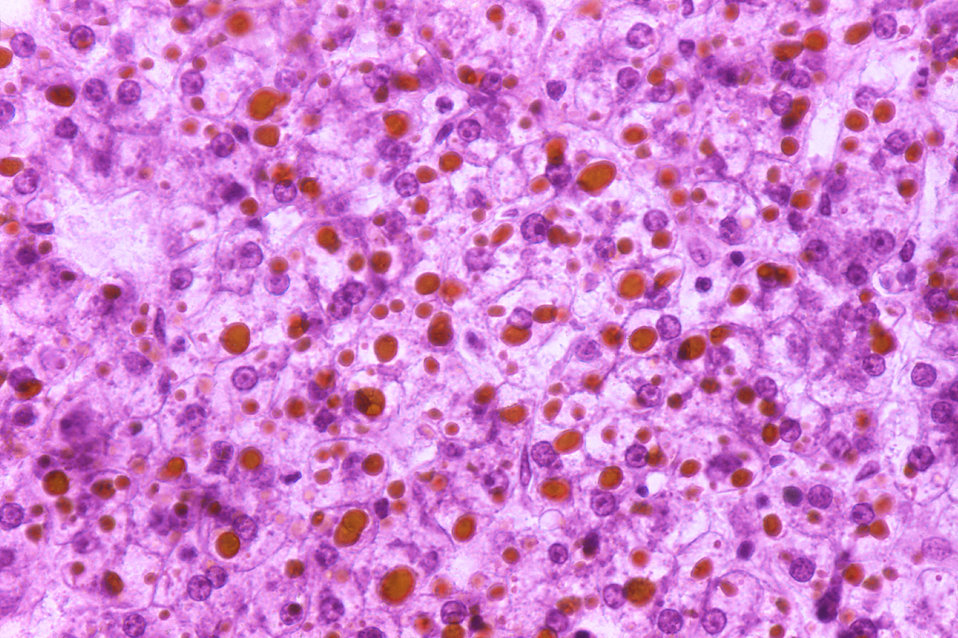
Histopathology of Reye's syndrome, liver